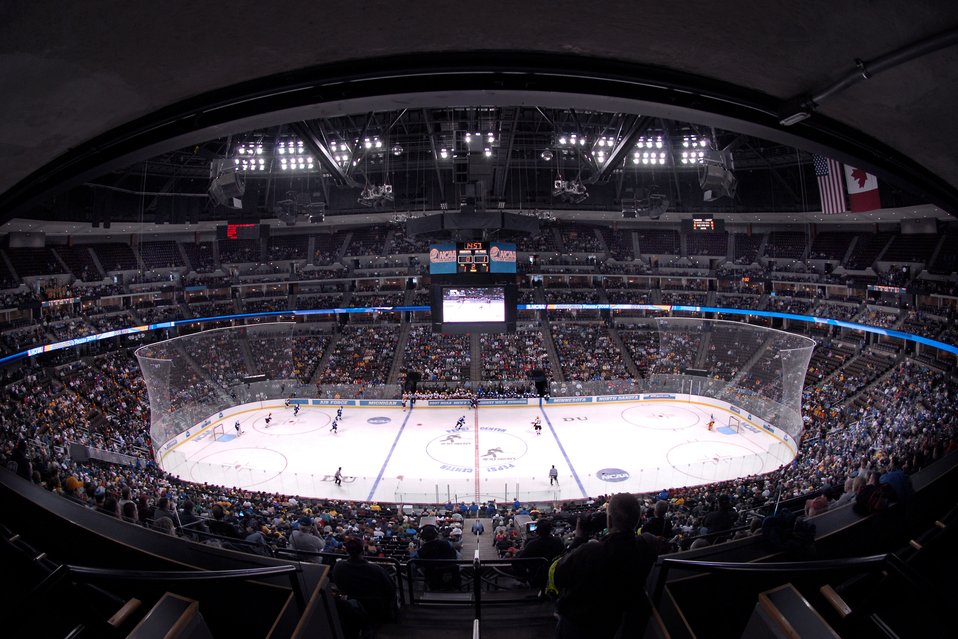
Gophers ground Falcons season during third period rally

The Pepsi Center in Denver was the site for Air Force's first appearance in the NCAA Hockey Tournament March 24. A crowd of 11,161 saw Minnesota edge the Falcons, 4-3.